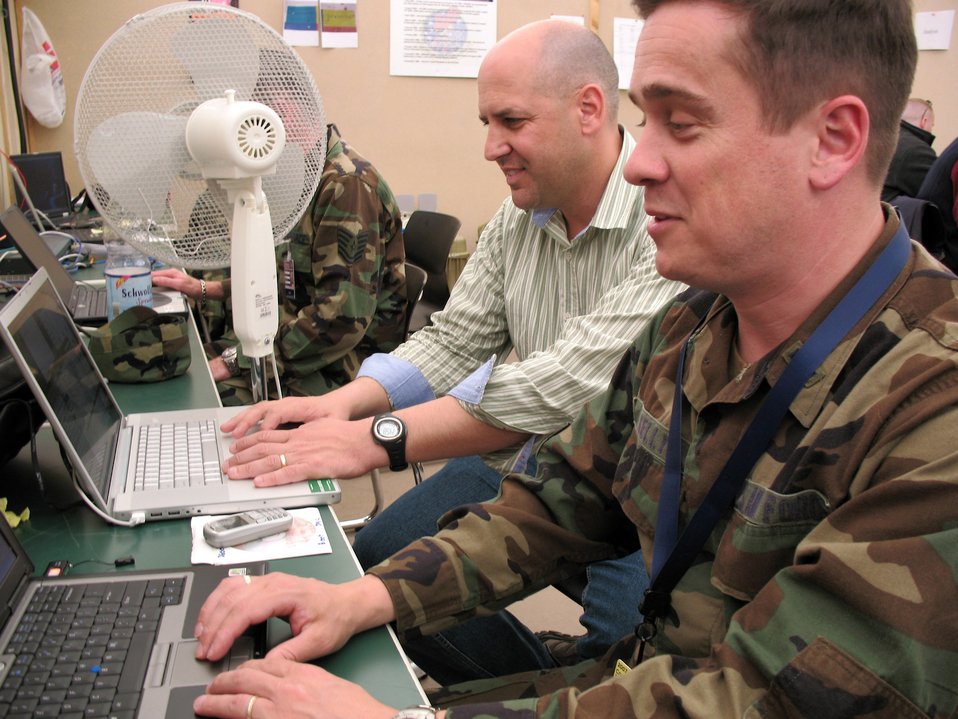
Nations at Combined Endeavor combat cyberspace security

Second 2nd Lt. Brian Kelly and Maj. Bradley Stoffolano participate in the Combined Endeavor 2007 exercise held in Baumholder, Germany. The exercise is designed to integrate and streamline communications on a global scale. The officers are assigned to the 102nd Information Warfare Squadron of the Rhode Island Air National Guard. The 102nd is a key component, providing network security for one of the world's largest multinational communications interoperability exercises. Their primary job is to defend network operations.